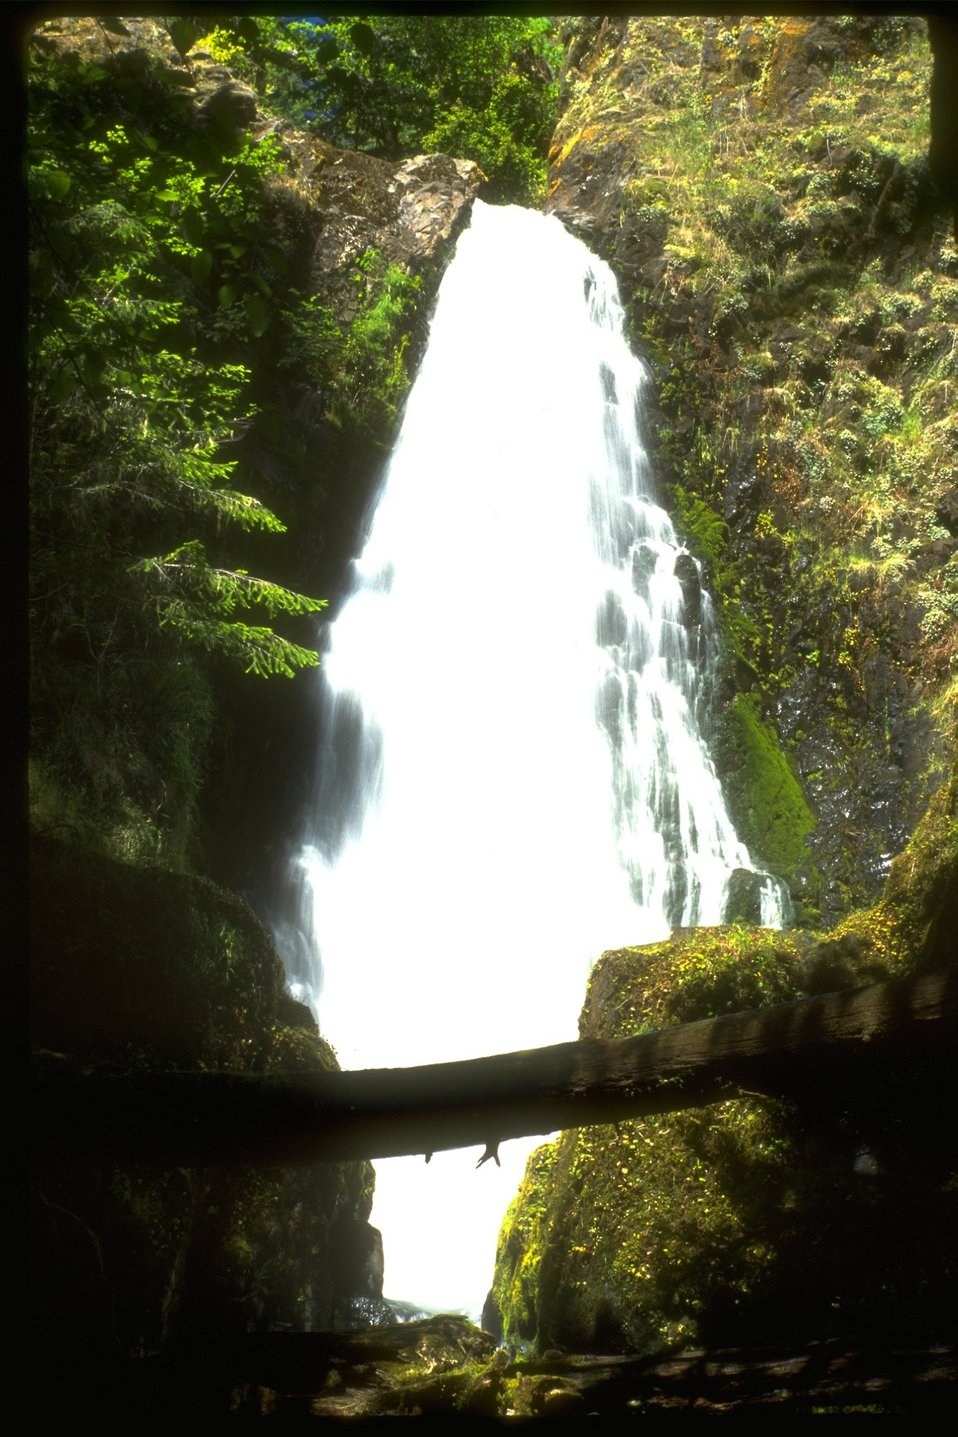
Susan Creek Falls